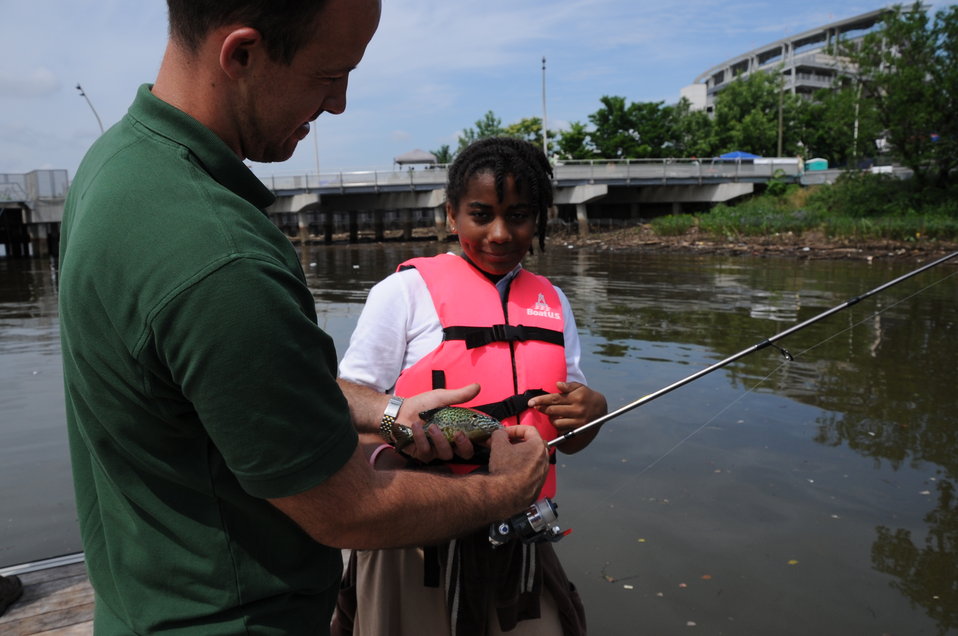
2013 National Fishing and Boating Week

Local students prepare to enjoy fishing at the annual kick-off of National Fishing and Boating Week on the Anacostia River in Washington D.C.